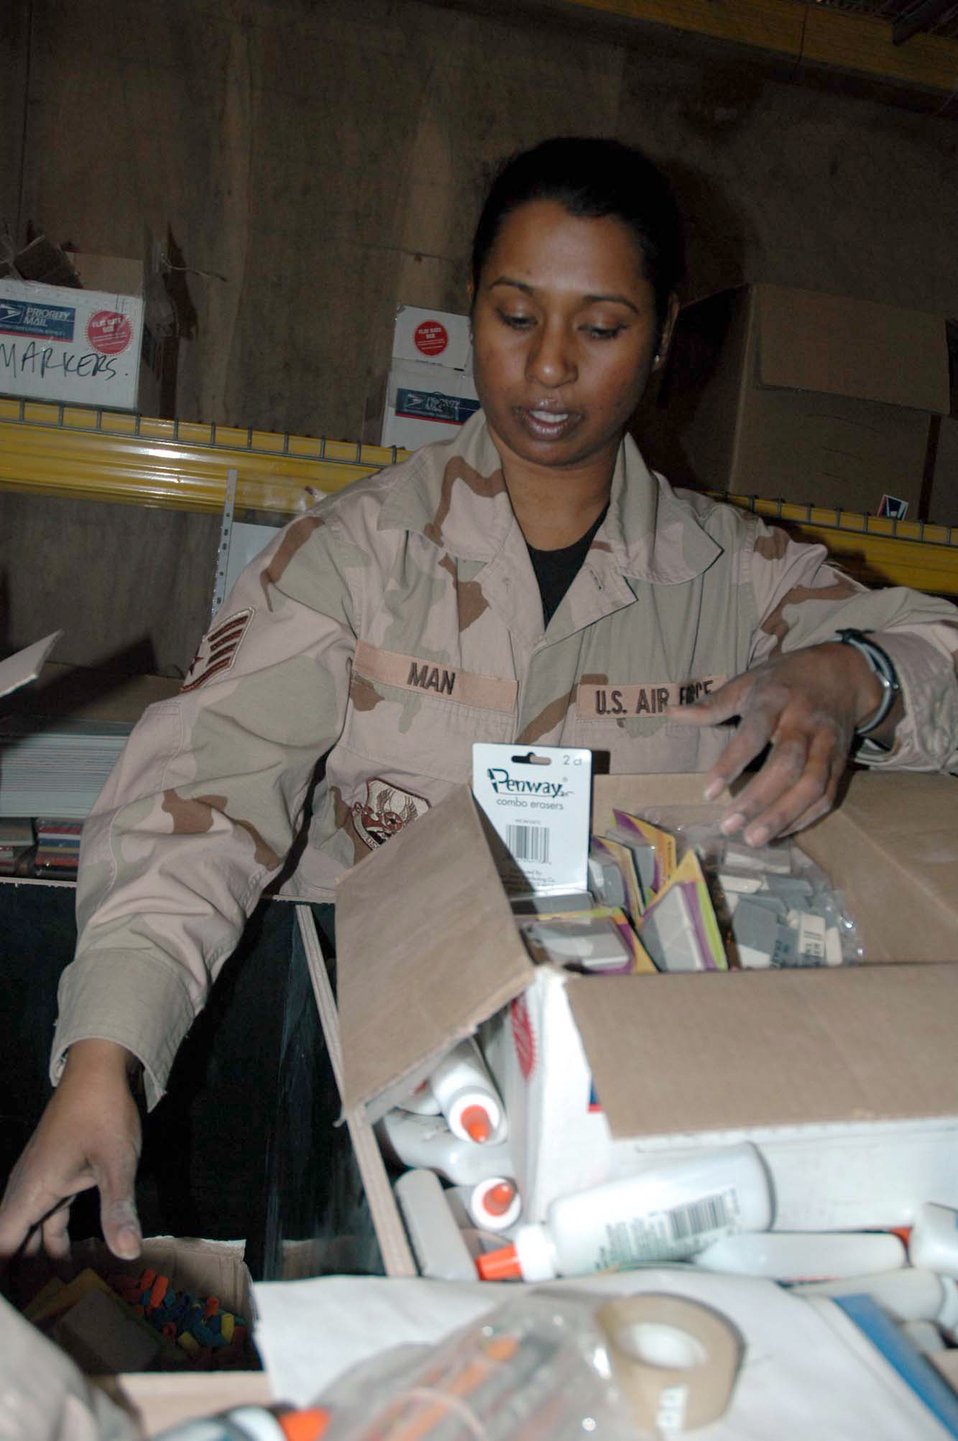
Operation Provide School Supplies

KIRKUK AIR BASE, Iraq (AFPN) -- Staff Sgt. Elizabeth Man sorts erasers donated to Operation Provide School Supplies. The project provides school supplies to children in the Kirkuk region. Sergeant Man is a chapel assistant deployed from Aviano Air Base, Italy.